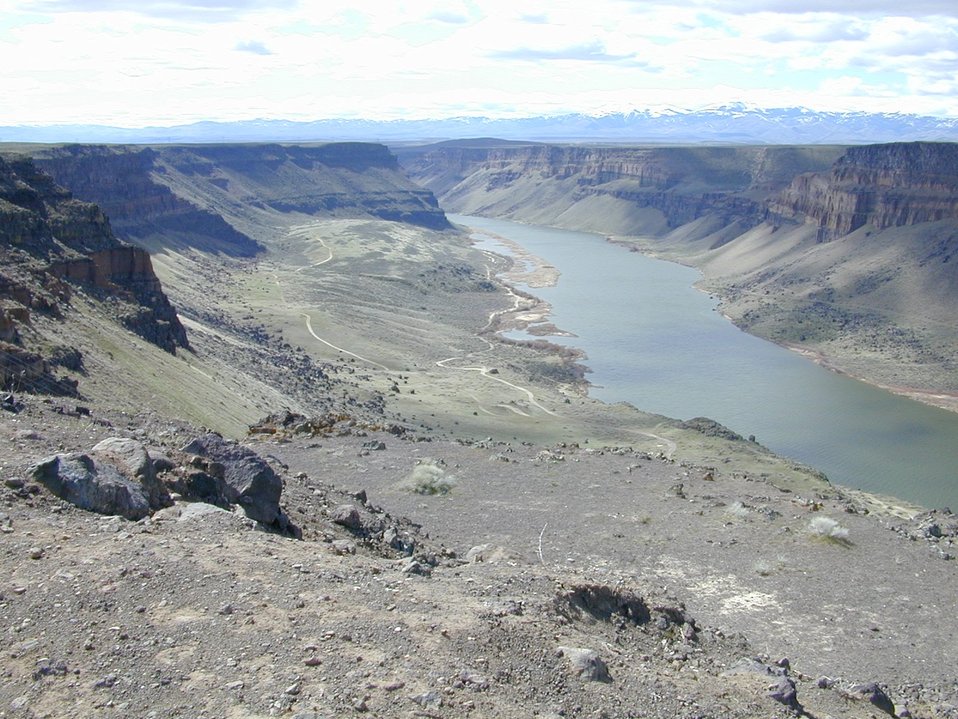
Scenic Snake River Birds of Prey National Conservation Area Lower Snake River District LSRD Snake River Canyon